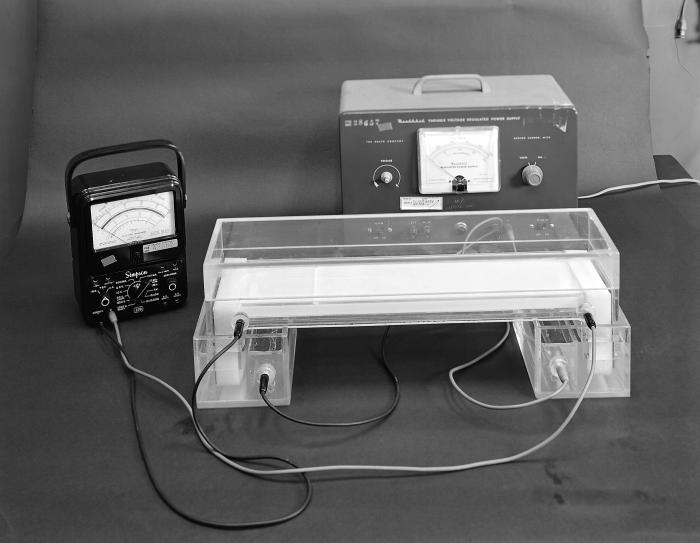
This historic image from 1963 depicts a starch block electrophoresis apparatus, which had been assembled, and made ready for a run. See PHIL 12024 for an unassembled view of the components. Note that at one end of the gel lane is a black wire, and at the other end is a white wire, which when activated will maintain a continuous electric field from end to end of the lane. This charge will promote the flow of the molecules that will travel from the negative pole to the positive pole.